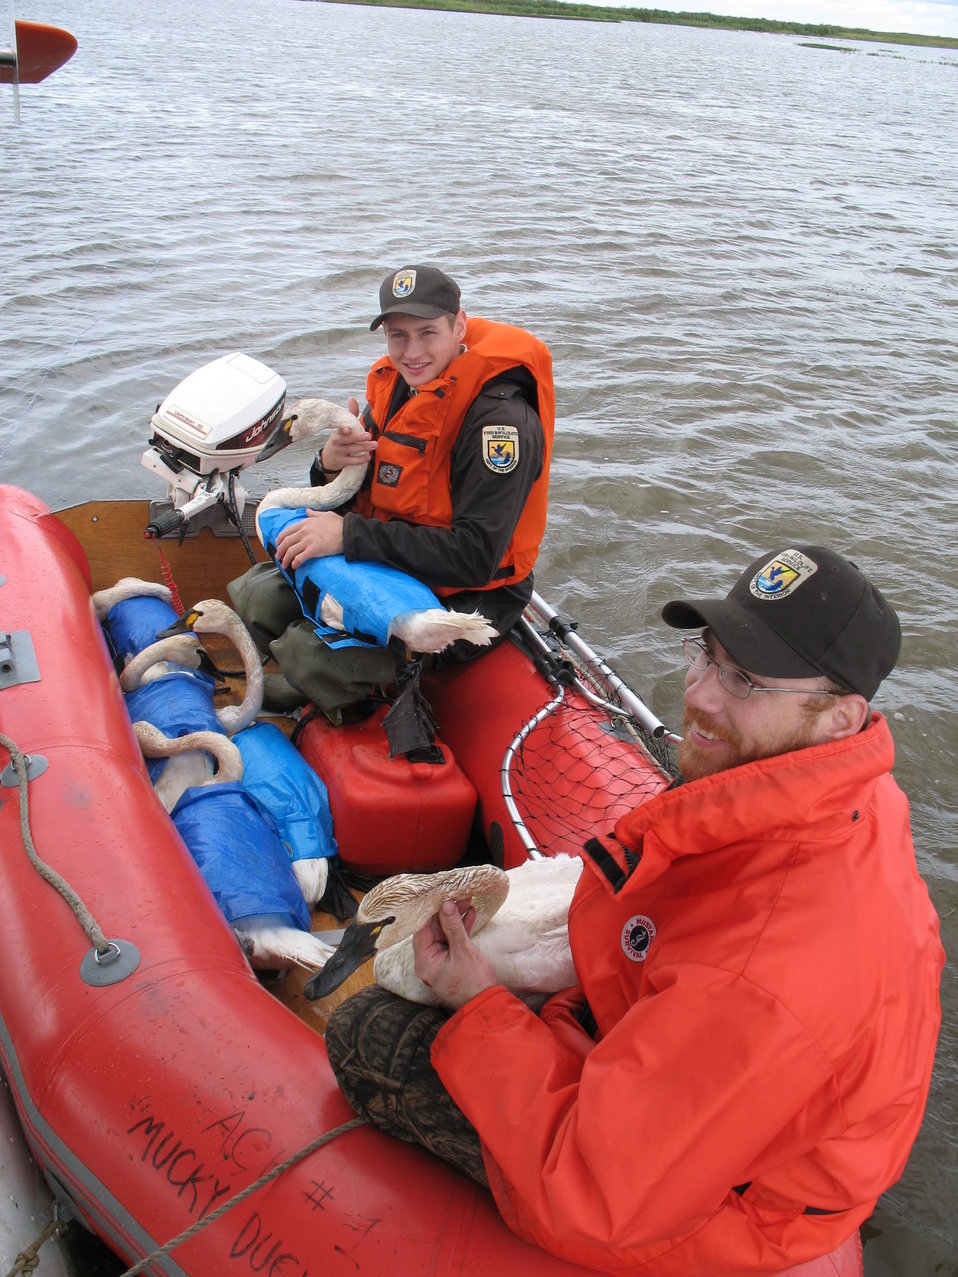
Swan Banding

In 2007 a project was initiated to band and collar flightless, non-breeding/failed nesting swans. Birds were rounded up with small boats, captured with dip nets, and processed. Each swan received a metal leg band and a plastic, coded neck collar.

USFWS Yukon Delta NWR